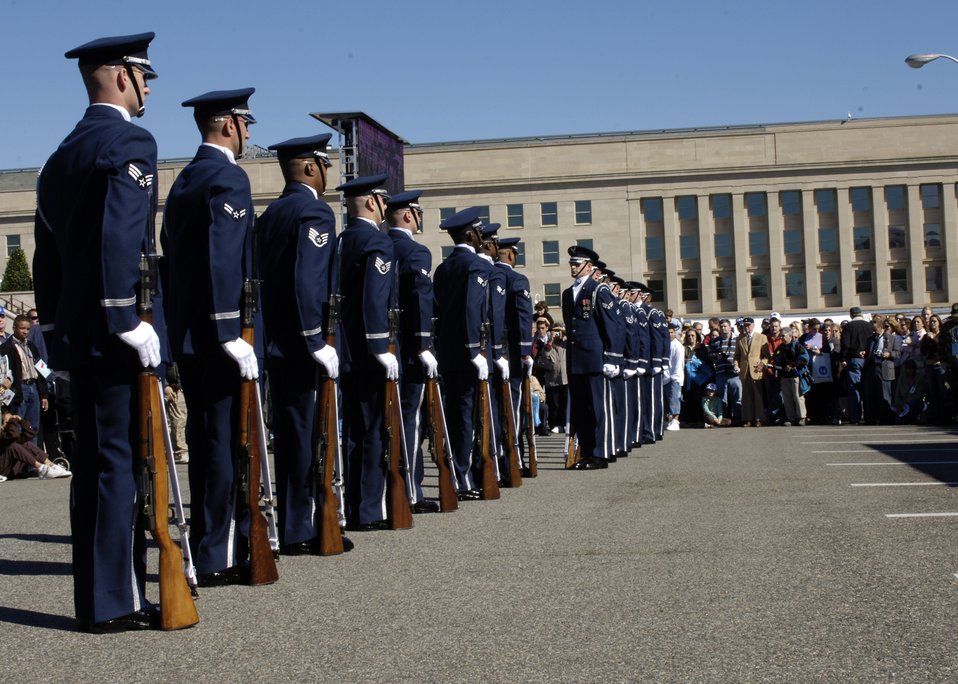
Drill Movements

Members of the United States Air Force Drill Team perform during the Air Force open house at the Pentagon on Saturday, Oct. 14, 2006. The open house is running in conjunction with the official ceremony to dedicate the Air Force Memorial. President George W. Bush will join Senior Defense Dept. and Air Force officials in a ceremony to present the memorial to the Nation. Desiged by the late James Ingo Freed the memorial with its three soaring spires inspired by the U.S. Air Force Thunderbirds bomb burst manuever, pays tribute to and honors the patriotic men and women of the U.S. Air Force and its predeccessor organizations. An open house will run near the Pentagon in conjunction with the dedication ceremony which will feature performances by the U.S. Air Force Band, the U.S. Air Force Honor Guard drill team, and will culminate with a concert featuring country music performer LeeAnn Womack.